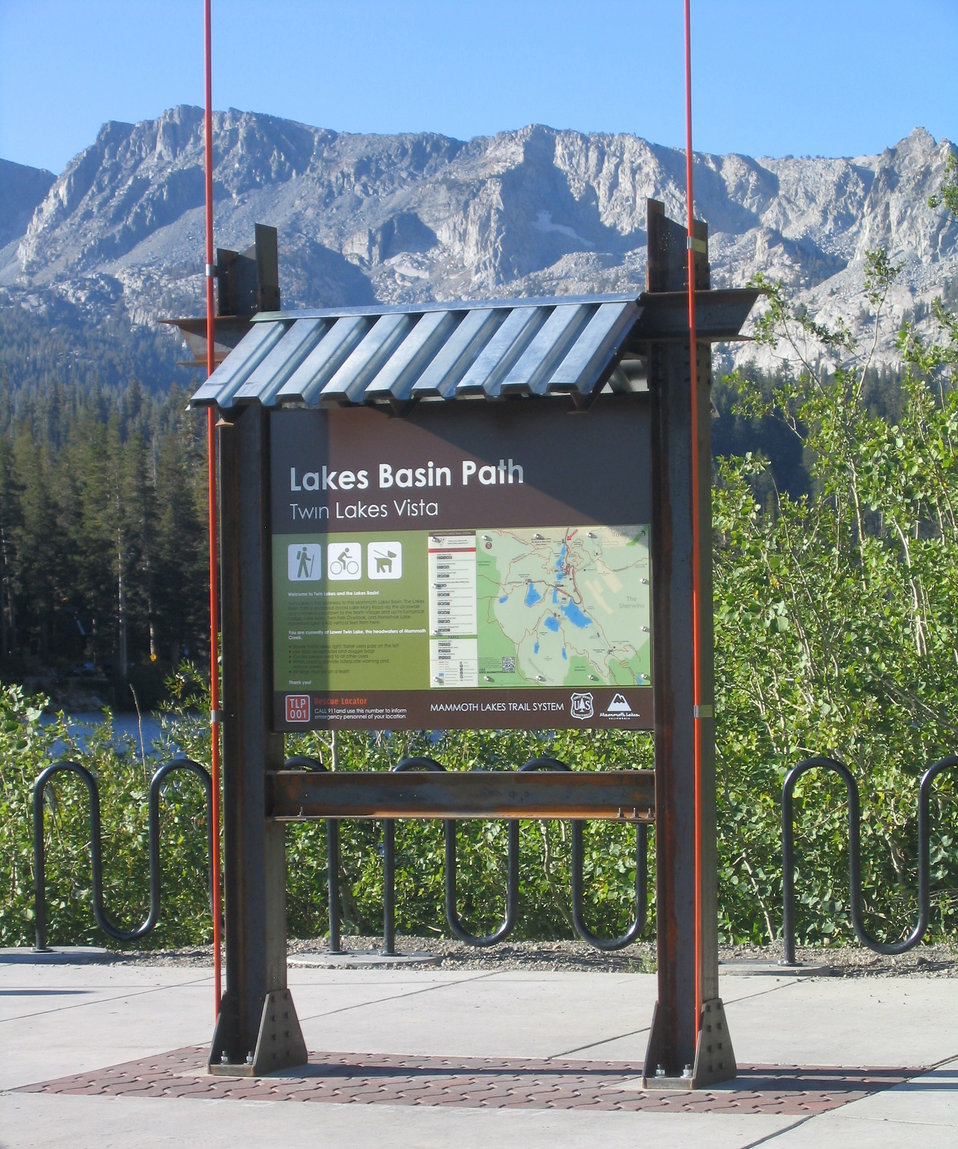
Lakes Basin Path Sign

A total of 125 wayfinding signs and 16 interpretive exhibits were installed along various Mammoth Lakes, California, paths and trails using Forest Service Recovery Act funding.